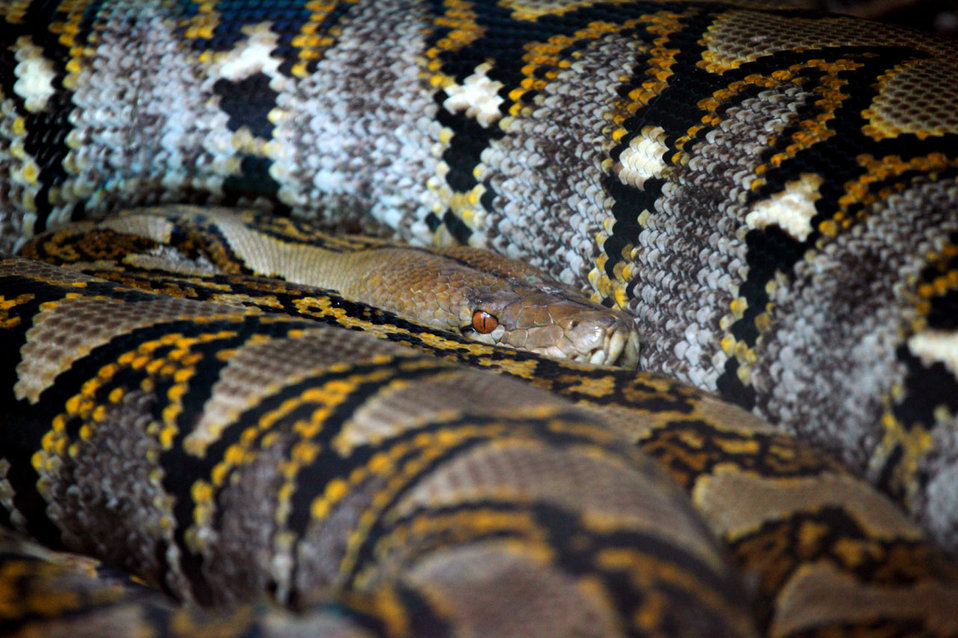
Large snake

Large python resting.